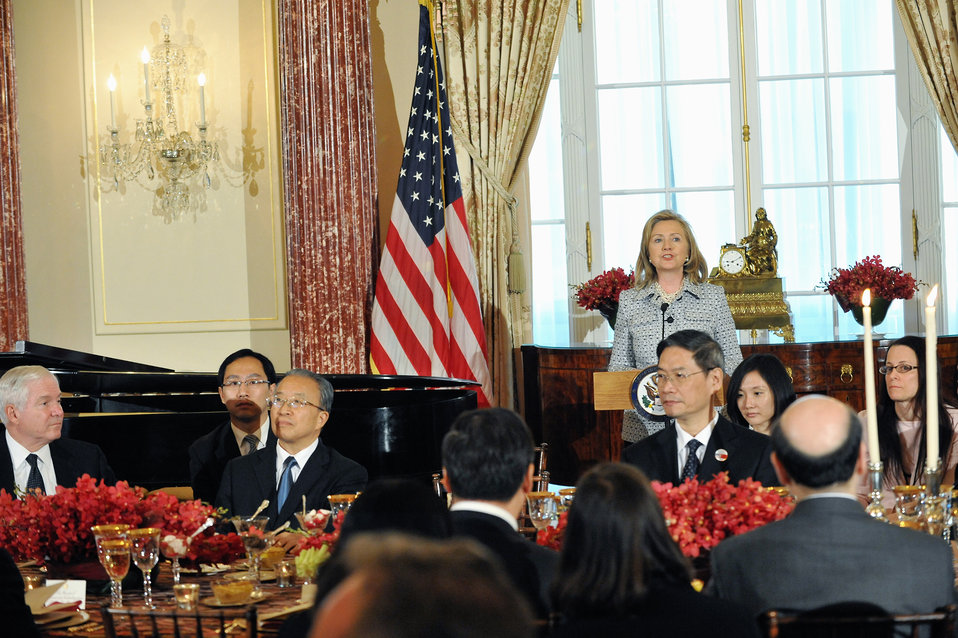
Secretaries Clinton and Geithner Co-Host a Banquet for Chinese Delegation

U.S. Secretary of State Hillary Rodham Clinton and U.S. Secretary of the Treasury Timothy Geithner co-host a banquet for Chinese Vice Premier Wang Qishan, Chinese State Councilor Dai Bingguo, and the Chinese delegation, at the U.S. Department of State in Washington, D.C., on May 9, 2011.